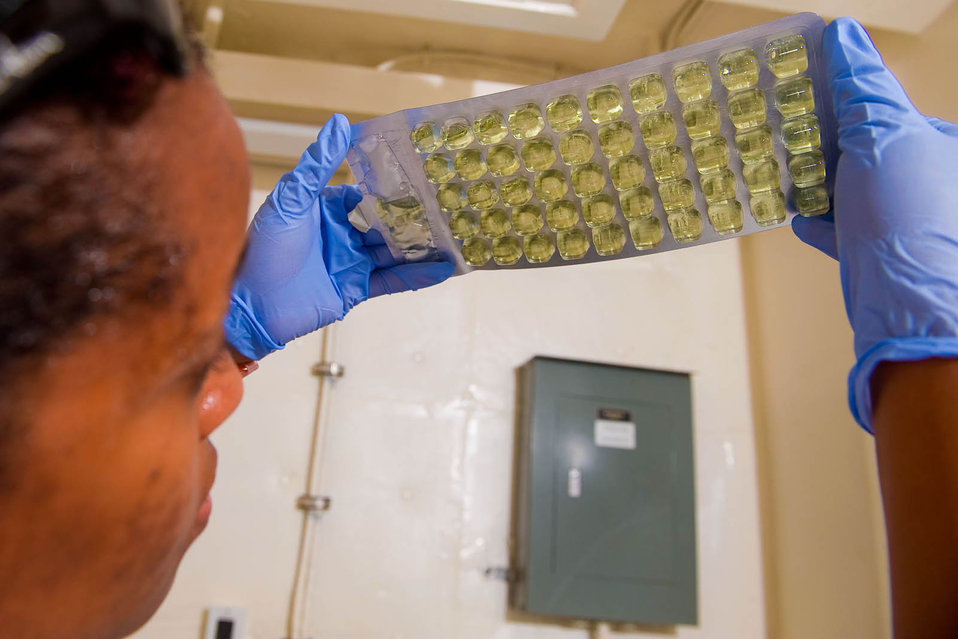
Checking for the presence of bacteria

Treda Grayson, EPA Office of Water, checks an incubation tray during a test for Enterococci bacteria.